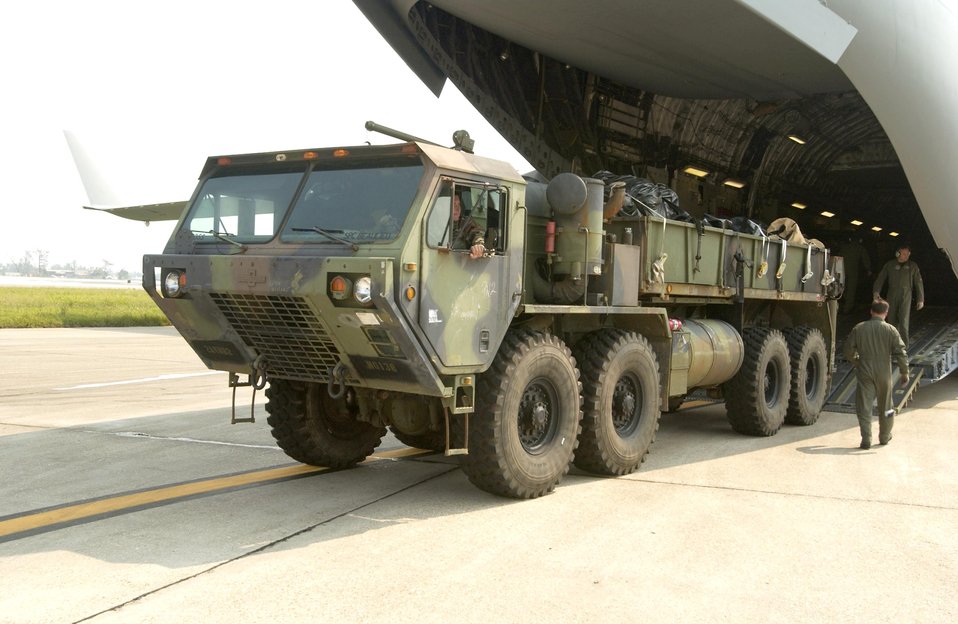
Hurricane Relief Efforts

LOUIS ARMSTRONG NEW ORLEANS INTERNATIONAL AIRPORT, La. -- Equipment for the U.S. Army's 82nd Airborne Division arrives Sept. 5 to support hurricane relief efforts here. Airmen with the 818th Contingency Response Group from McGuire Air Force Base, N.J., helped process the equipment and unload it from the aircraft.